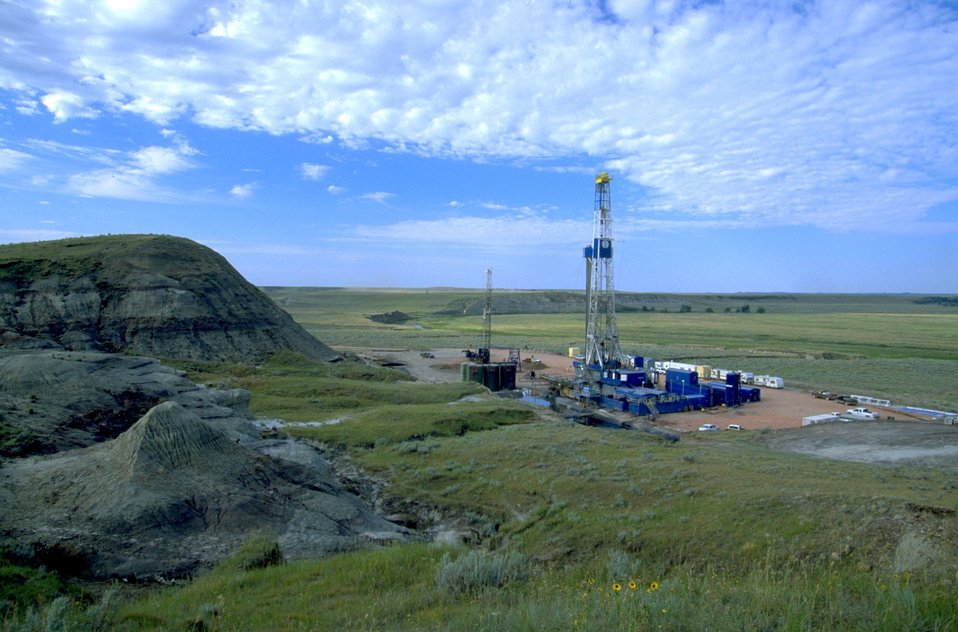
Oil drilling rig (larger) and workover rig (smaller) with lined reserve pit just to the left of the larger rig (water can be seen in the pit).